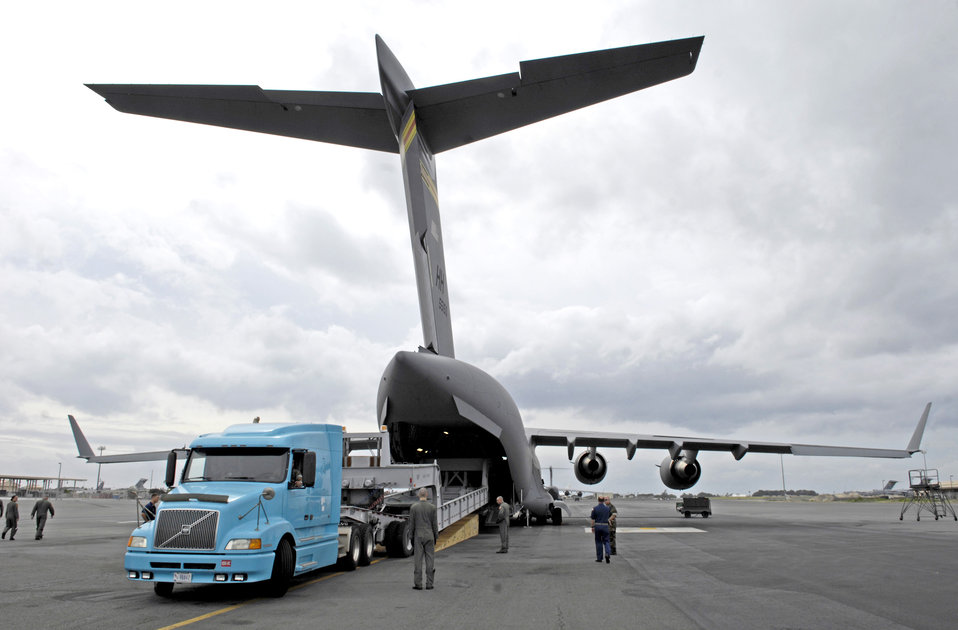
C-17 reaches dry dock

A dry dock transport vehicle is loaded on a C-17 Globemaster III Dec. 2 at Hickam Air Force Base, Hawaii. The flight was the first operational movement of a dry dock transport by a C-17. The aircraft is assigned to the 535th Airlift Squadron.